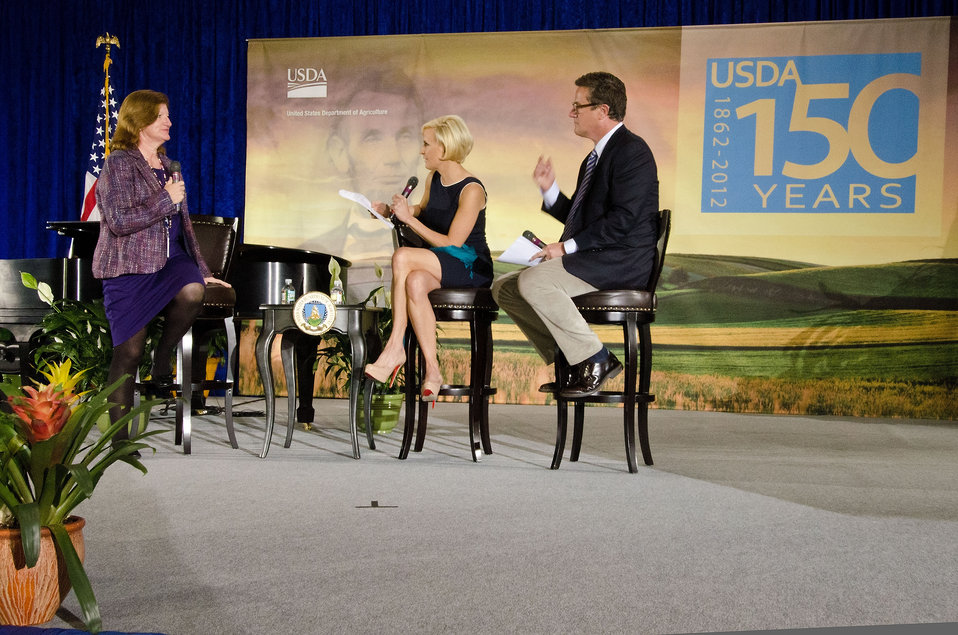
From left: Maggie Rhodes, Natural Resource Conservation Service a volunteer for the U.S. Department of Agriculture Provincial Reconstruction Team in Afghanistan, Morning Joe host, Mika Brzezinski and Former Congressman Joe Scarborough (R-Fla.) hosts of MSNBC’s “Morning Joe and Masters of Ceremony listen Rhodes speak about the aid provided to farmers in Afghanistan at the United States Department of Agriculture's 150th Anniversary celebration in Washington, D.C., on Tuesday, May 15, 2012.